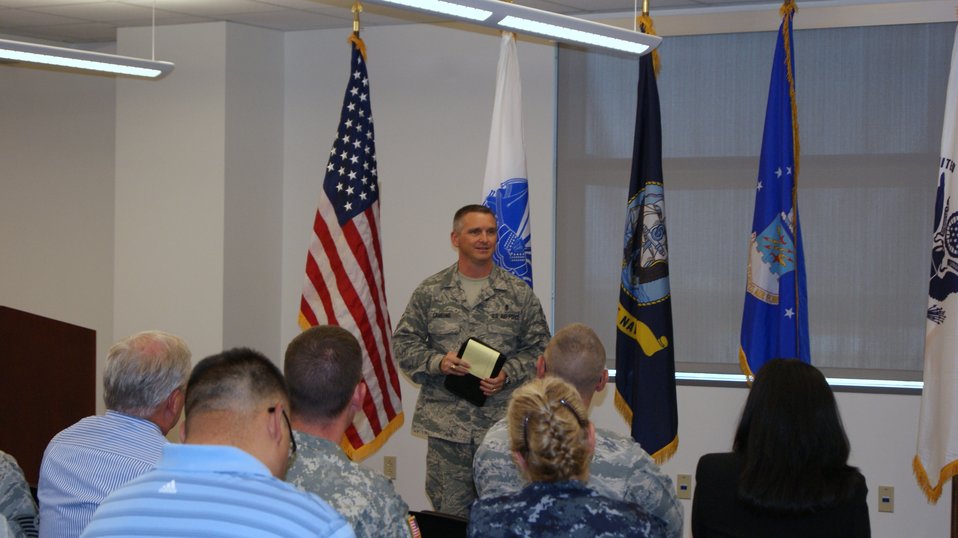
AF chief honored with Army’s prestigious medical Order

Chief Master Sgt. Kevin Lambing briefs a joint group of service members and civilians at the Medical Education and Training Campus at Fort Sam Houston, Texas, recently. Lambing was inducted into the Army's Order of the Military Medical Merit April 20.